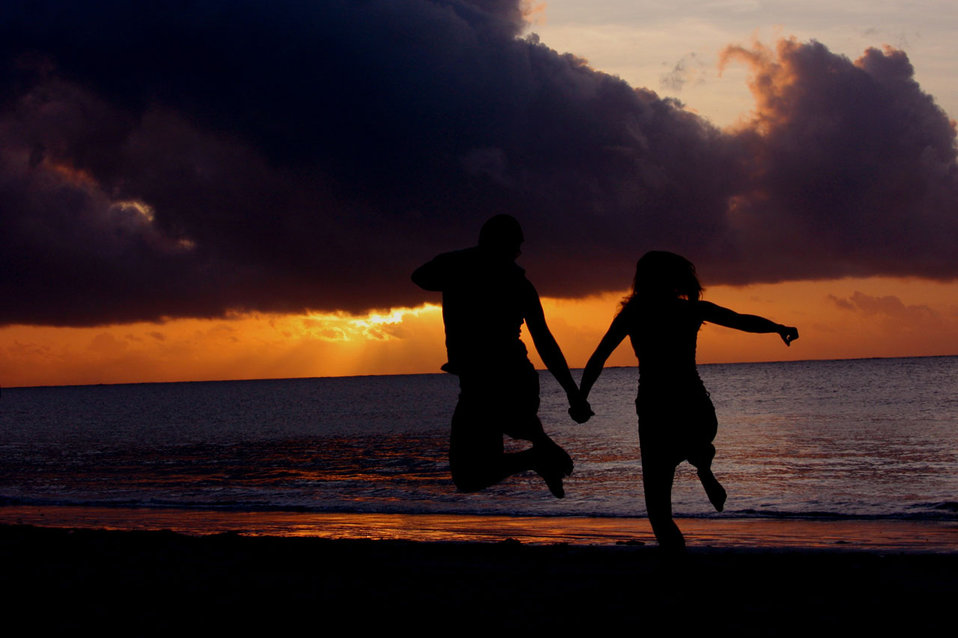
Jump

Sunset in bamburi.